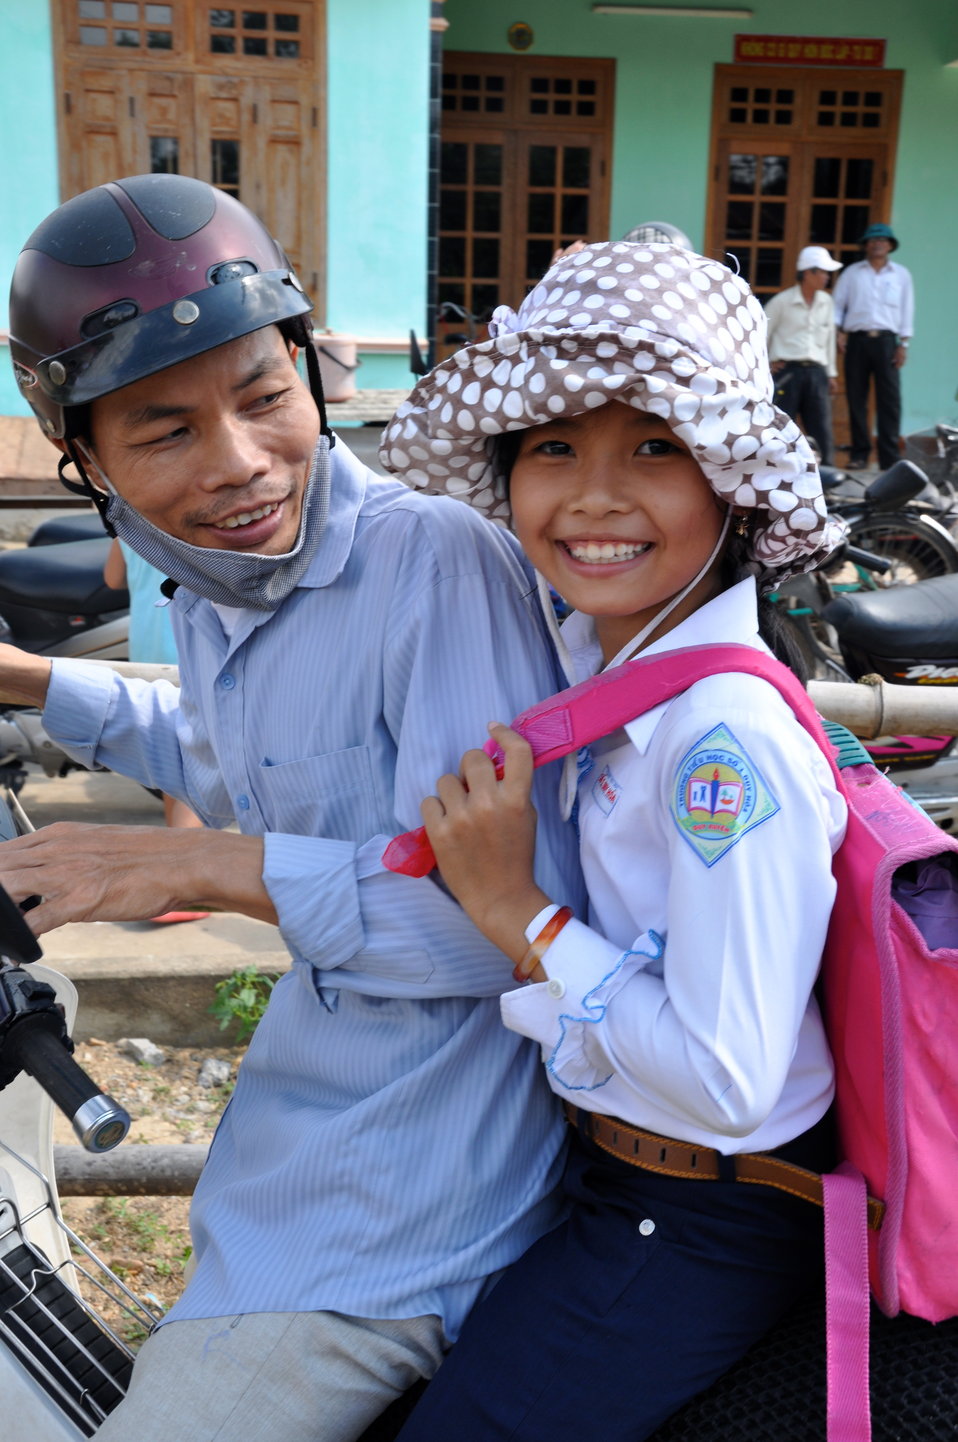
USAID, Red Cross Support Disaster Response Drill in Duy Hoa Commune, Quang Nam Province

Duy Hoa Commune, Quang Nam Province
December 5, 2012